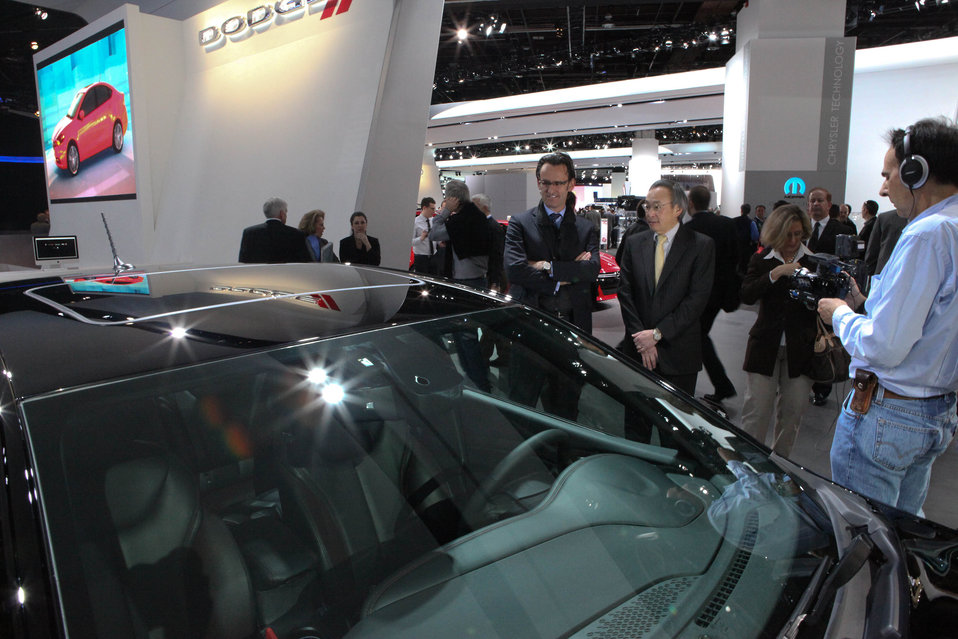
Energy Secretary Steven Chu chatting with a Dodge representative about most current technology.